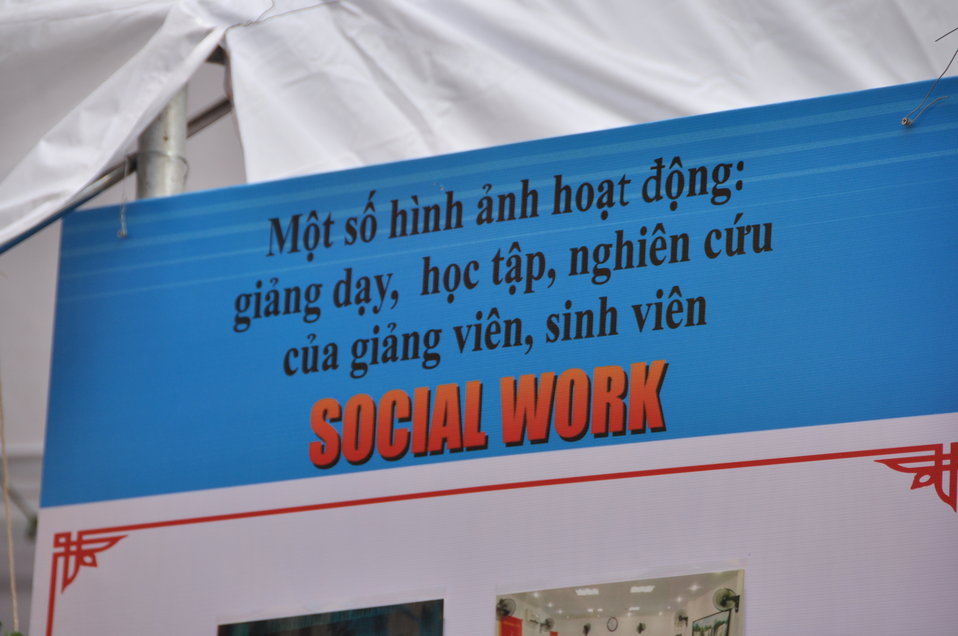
USAID Supports Social Work Education

Photo: @USAIDVietnam, November 9, 2012